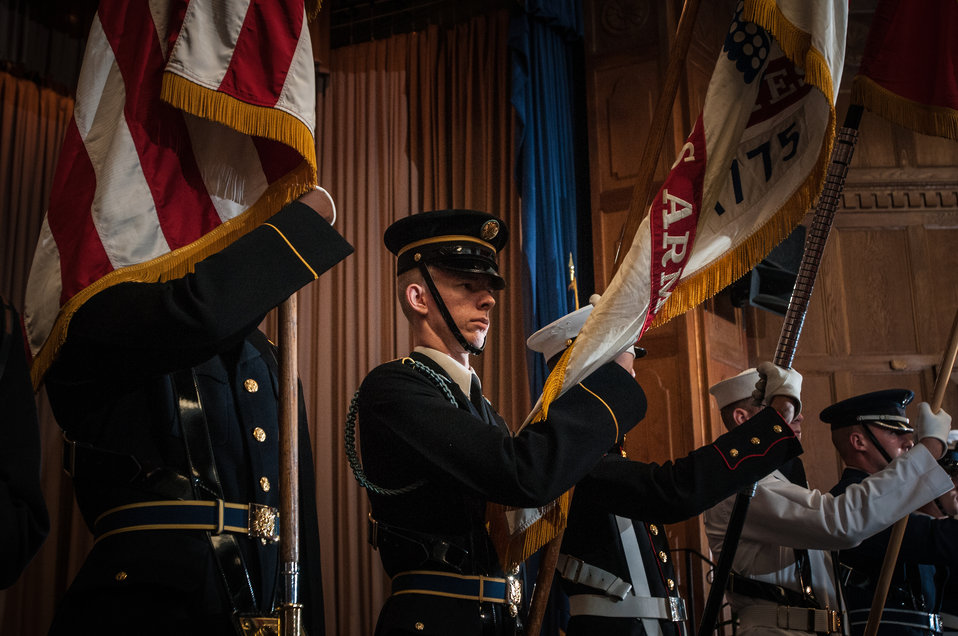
The U.S. Military District of Washington Joint Armed Forces Color Guard present the colors during the U.S. Department of Agriculture (USDA) 2013 National Hispanic Heritage Month ”Hispanics: Serving and Leading our Nation with Pride and Honor,” on Thursday, Sept. 19, 2013, in the Jefferson Auditorium, USDA Headquarters, Washington, D.C.